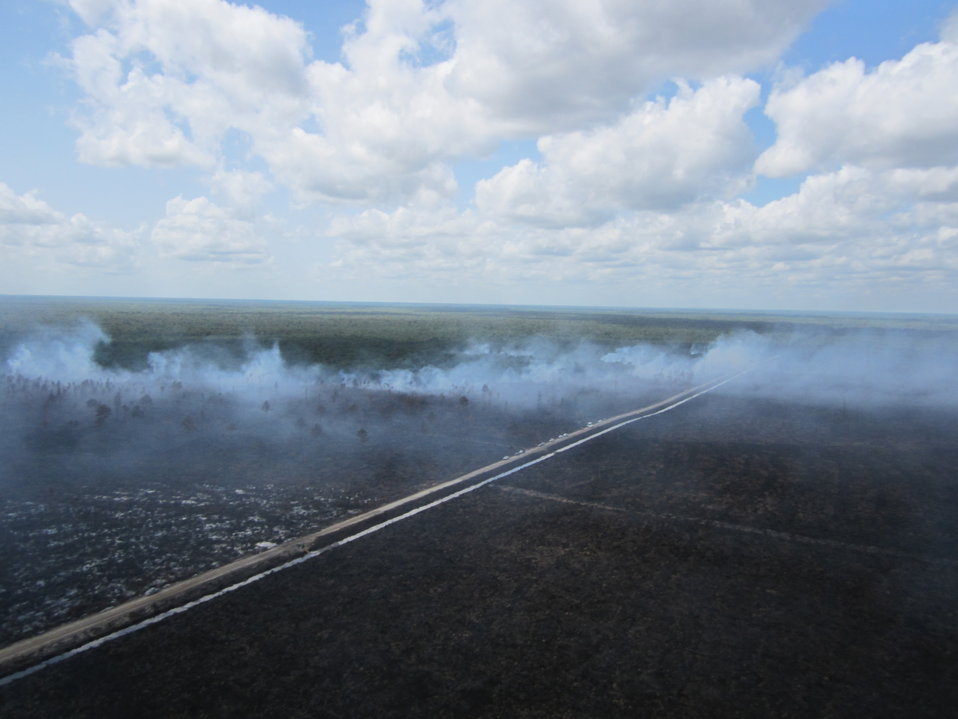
Smoke front Lateral West Fire

Suffolk, VA, August 2011: The Lateral West Fire in Great Dismal Swamp burns two days before Hurricane Irene arrives.